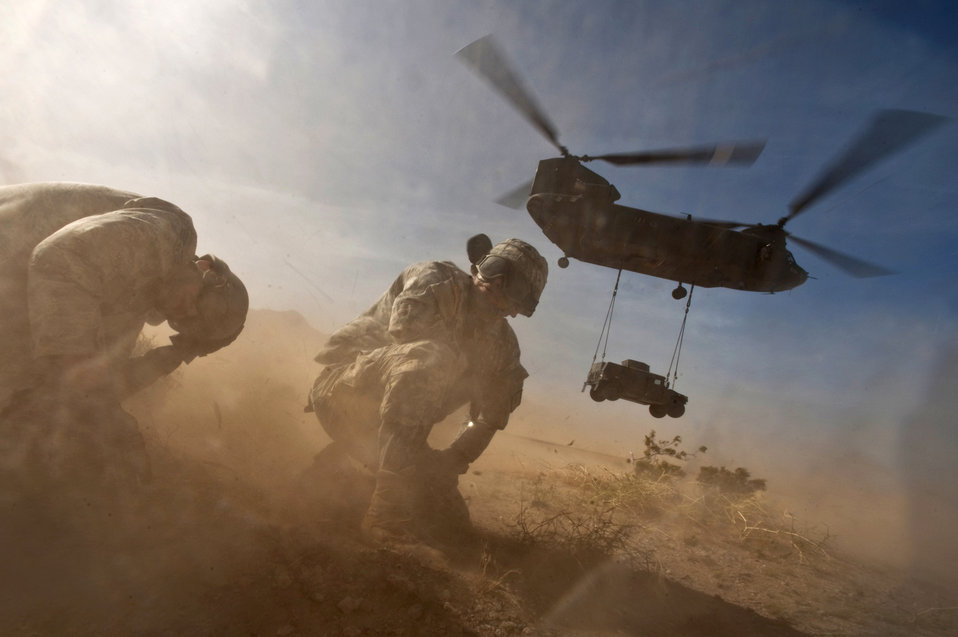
Airmen and Soldiers conduct airdrop and sling-load training

Army Staff Sgt. Hector Hoyas and Senior Airman Matthew Phillips turn away as a CH-47 Chinook helicopter takes off with a HUMVEE sling-load April 15, 2011, as part of airdrop and sling-load training at Nellis Air Force Base, Nev. Sergeant Hoyas is an Aerial Delivery Field Service Department instructor from Fort Lee, Va. Airman Phillips is an airborne pavements and equipment operator assigned to the 820th RED HORSE squadron.